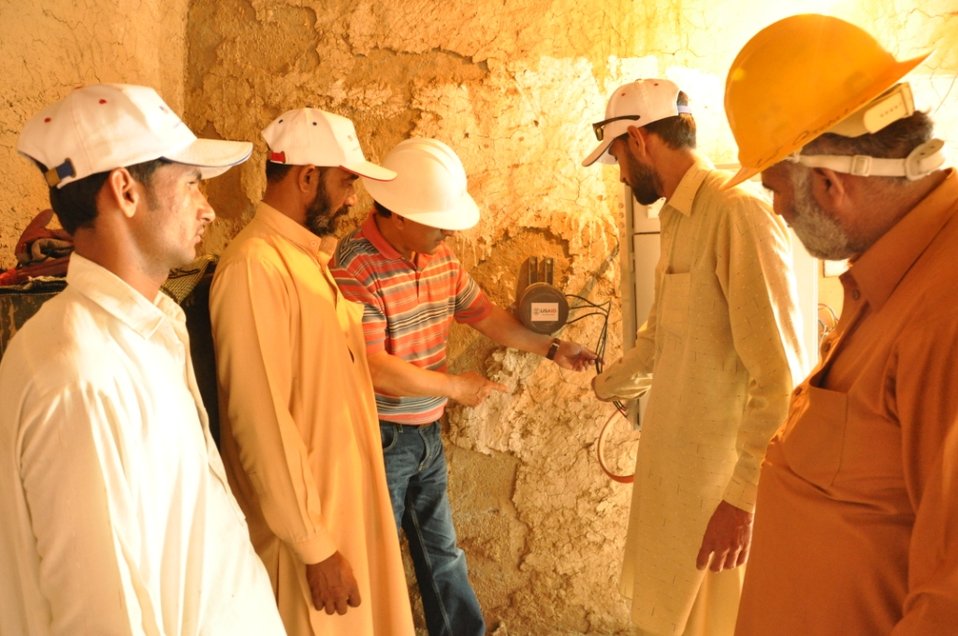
Usaid To Provide Technical Assistance To Improve Efficiency Of Tube-Wells In Iesco By Installing 2600 Lt Capacitors at Islamabad on April 26, 2012